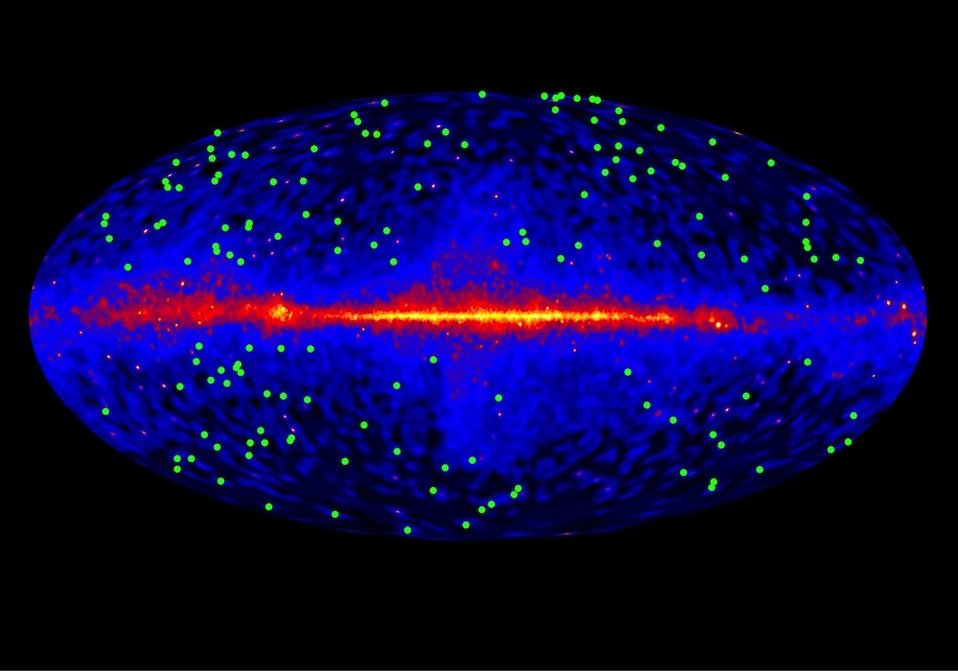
THIS PLOT SHOWS THE LOCATIONS OF 150 BLAZARS (GREEN DOTS) USED IN THE EBL STUDY.

THE BACKGROUND MAP SHOWS THE ENTIRE SKY AND WAS CONSTRUCTED FROM FOUR YEARS OF GAMMA RAYS WITH ENERGIES ABOVE 10 BILLION ELECTRONS VOLTS (GEV) DETECTED BY FERMI. THE PLANE OF OUR MILKY WAY GALAXY RUNS ALONG THE MIDDLE OF THE PLOT. THE FERMI LAT INSTRUMENT IS THE FIRST TO DETECT MORE THAN 500 SOURCES IN THIS ENERGY RANGE.